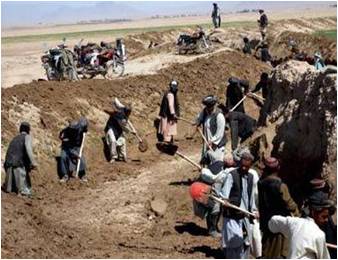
Quick Action Saves Daman Farms

On February 15, 2010, the Kandahar Provincial Reconstruction Team (PRT) received an urgent request from the World Food Program to help the people of Daman District repair their canals that had recently been damaged by severe flooding. If not repaired within three weeks, all of the year’s crops would be lost, risking serious economic instability. USAID’s Food Insecurity Response for Urban Populations (FIRUP) program stepped in to help, quickly mobilizing 6,600 laborers, and 15 excavators to clear hundreds of kilometers of critical canals. The rapid response saved Daman District’s crops and the livelihoods of many of its local citizens.
With a largely rural population of 90,000 people, most of Daman’s men work in the agriculture sector. According to local farmers, the canal left unrepaired would result in a lack of irrigation forcing them to grow poppy to support their families. In response, the Kandahar PRT organized a shura with the Daman District leader and district elders, led by Kandahar Provincial Governor Tooryalai Wesa, in order to develop an emergency plan.
The emergency program repaired 320 kilometers of critical irrigation canals in just 16 days. When insurgents attempted to interfere with the project, local elders successfully resisted them. The repairs successfully spared any damage to Daman District’s crops.
In addition to saving the district’s farms, the activity provided short-term employment opportunities, while making cash available to purchase necessary agricultural supplies such as seeds and farming equipment. The project reinvigorated the local economy to ensure a plentiful harvest this growing season, and paved the way for future rehabilitation work to ensure the sustainability of the district’s irrigation network.
USAID’s FIRUP program promotes stability through temporary employment and income generation opportunities in targeted populations to reduce the number of food-insecure and/or unemployed Afghans joining the insurgency.